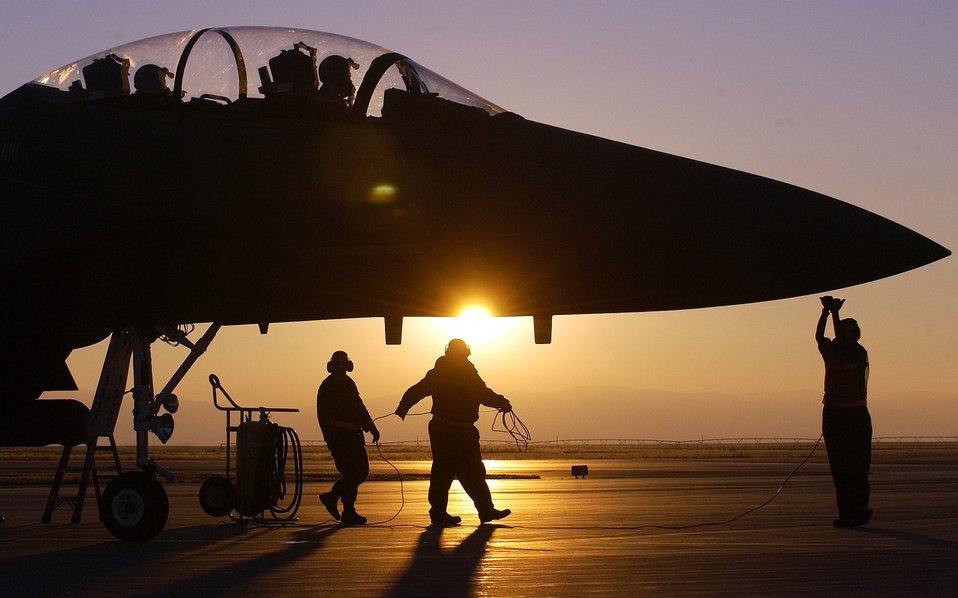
Night mission

MOUNTAIN HOME AIR FORCE BASE, Idaho (AFPN) -- A crew chief uses hand signals to communicate with an aircrew before they take off to perform an evening training sortie over central Idaho. The F-15E Strike Eagle is a dual-role fighter designed to perform air-to-air and air-to-ground missions. An array of avonics and electronics systems give the F-15E the capability to fight at low altitude, day or night, and in all weather.